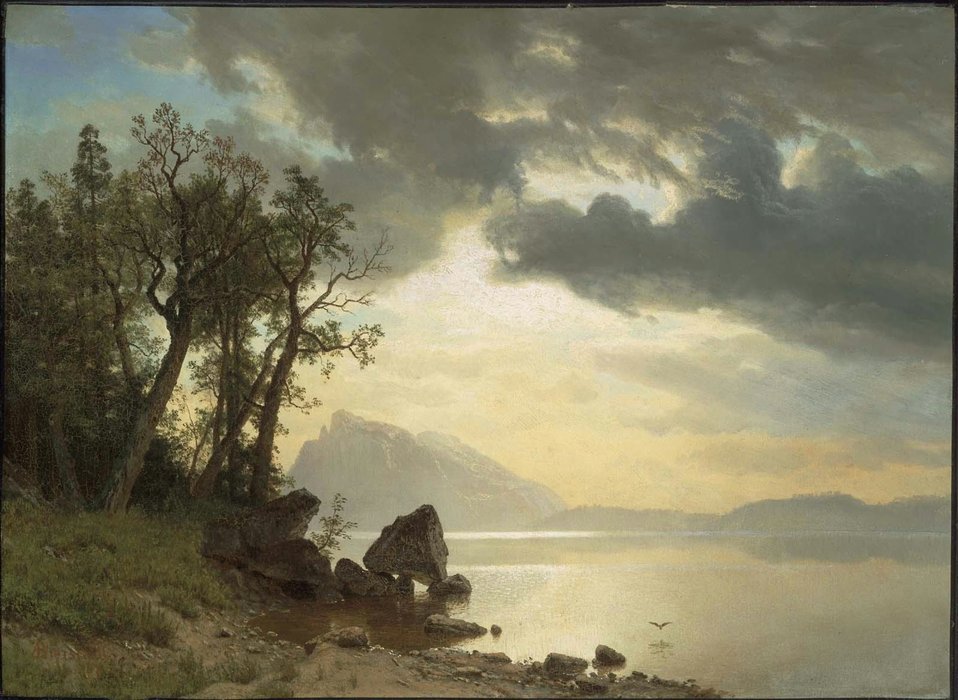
Albert Bierstadt - Lake Tahoe, California